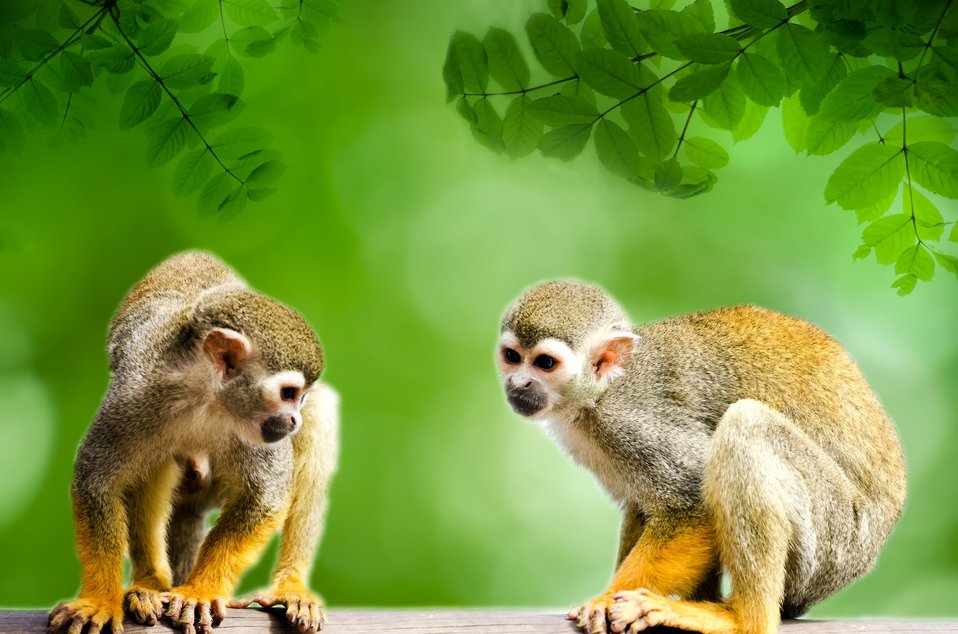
Animals - squirrel monkey.